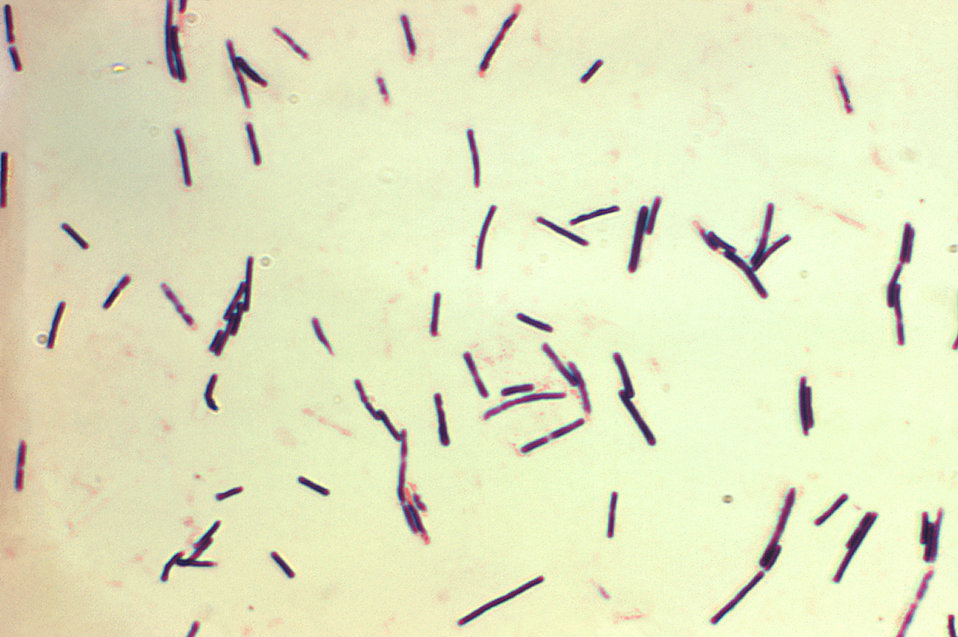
This photomicrograph reveals Clostridium perfringens grown in Schaedler's broth using Gram-stain.